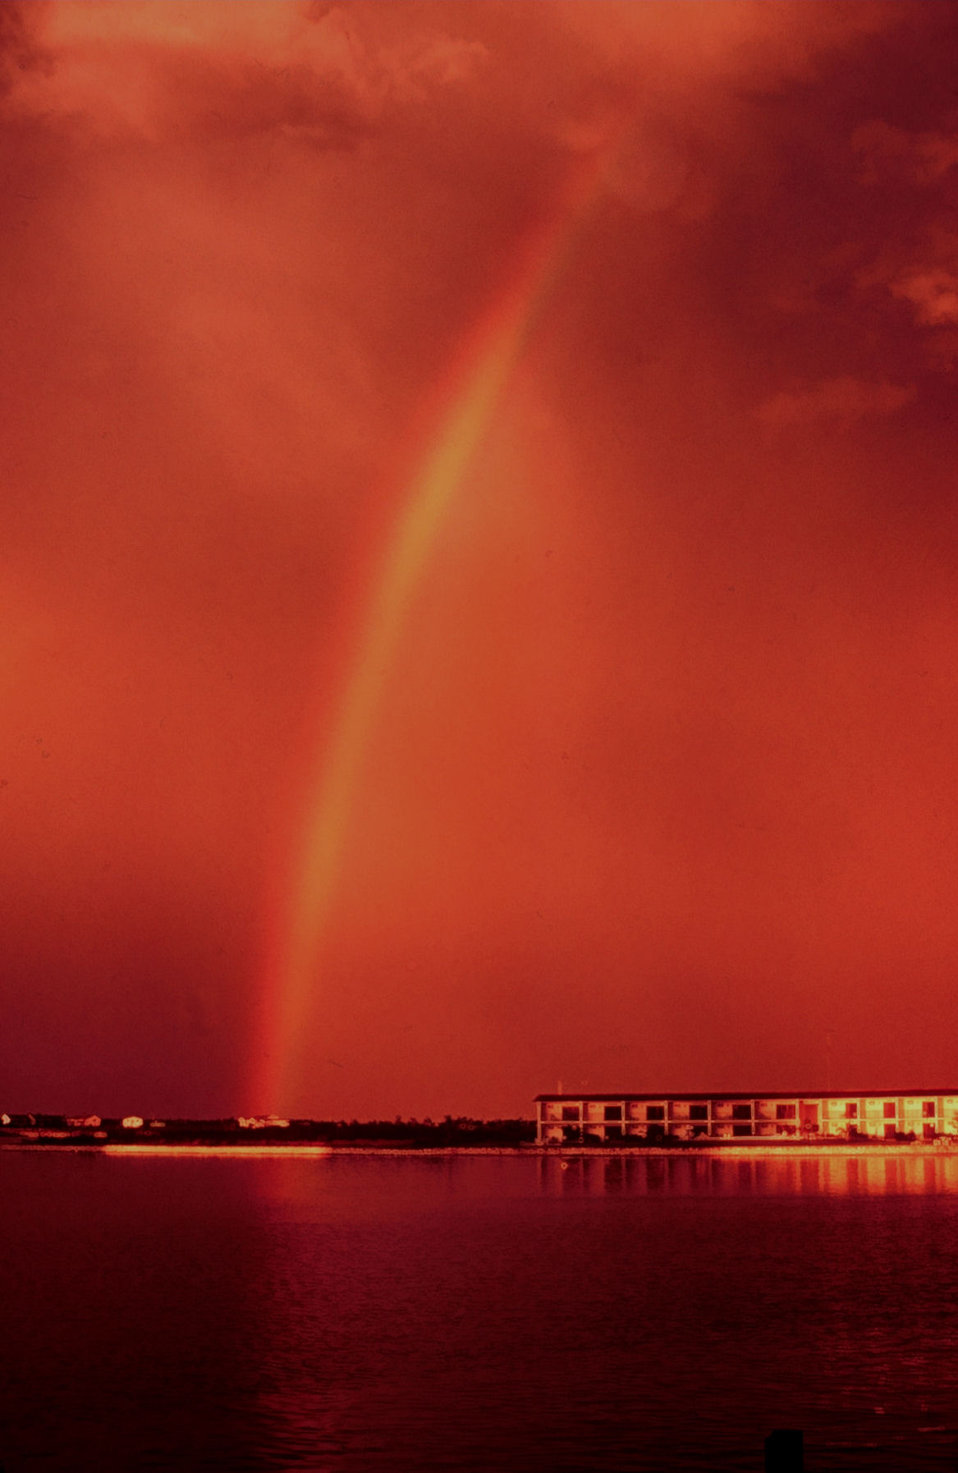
Rainbow